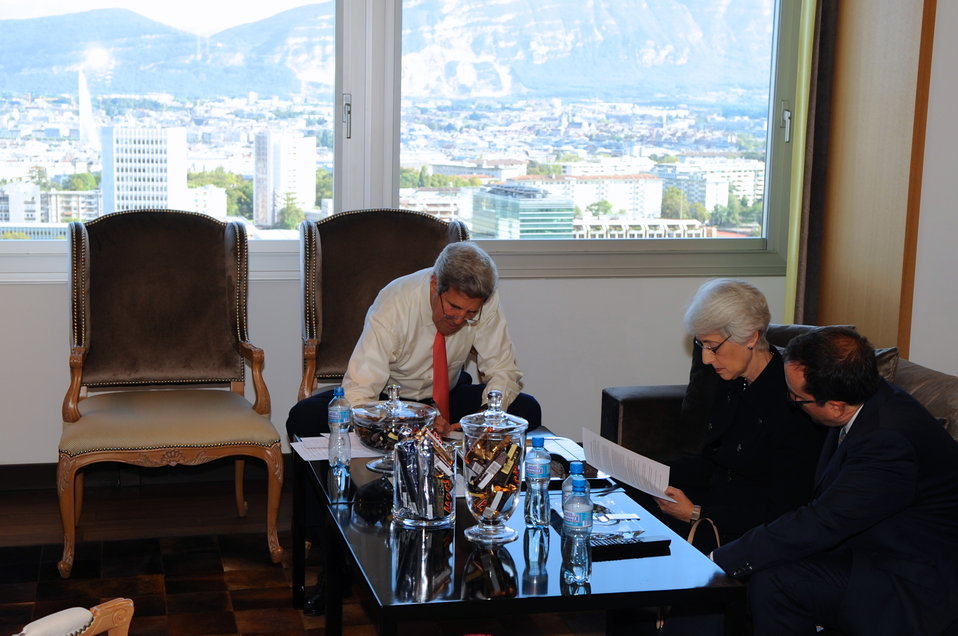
Secretary Kerry, Undersecretary Sherman Work on Draft Agreement

4:33 p.m., September 13, 2013 - U.S. Secretary of State John Kerry, Undersecretary for Political Affairs Wendy Sherman, and Executive Secretary John Bass discuss changes to a draft U.S.-Russian agreement regarding the elimination of Syrian chemical weapons.